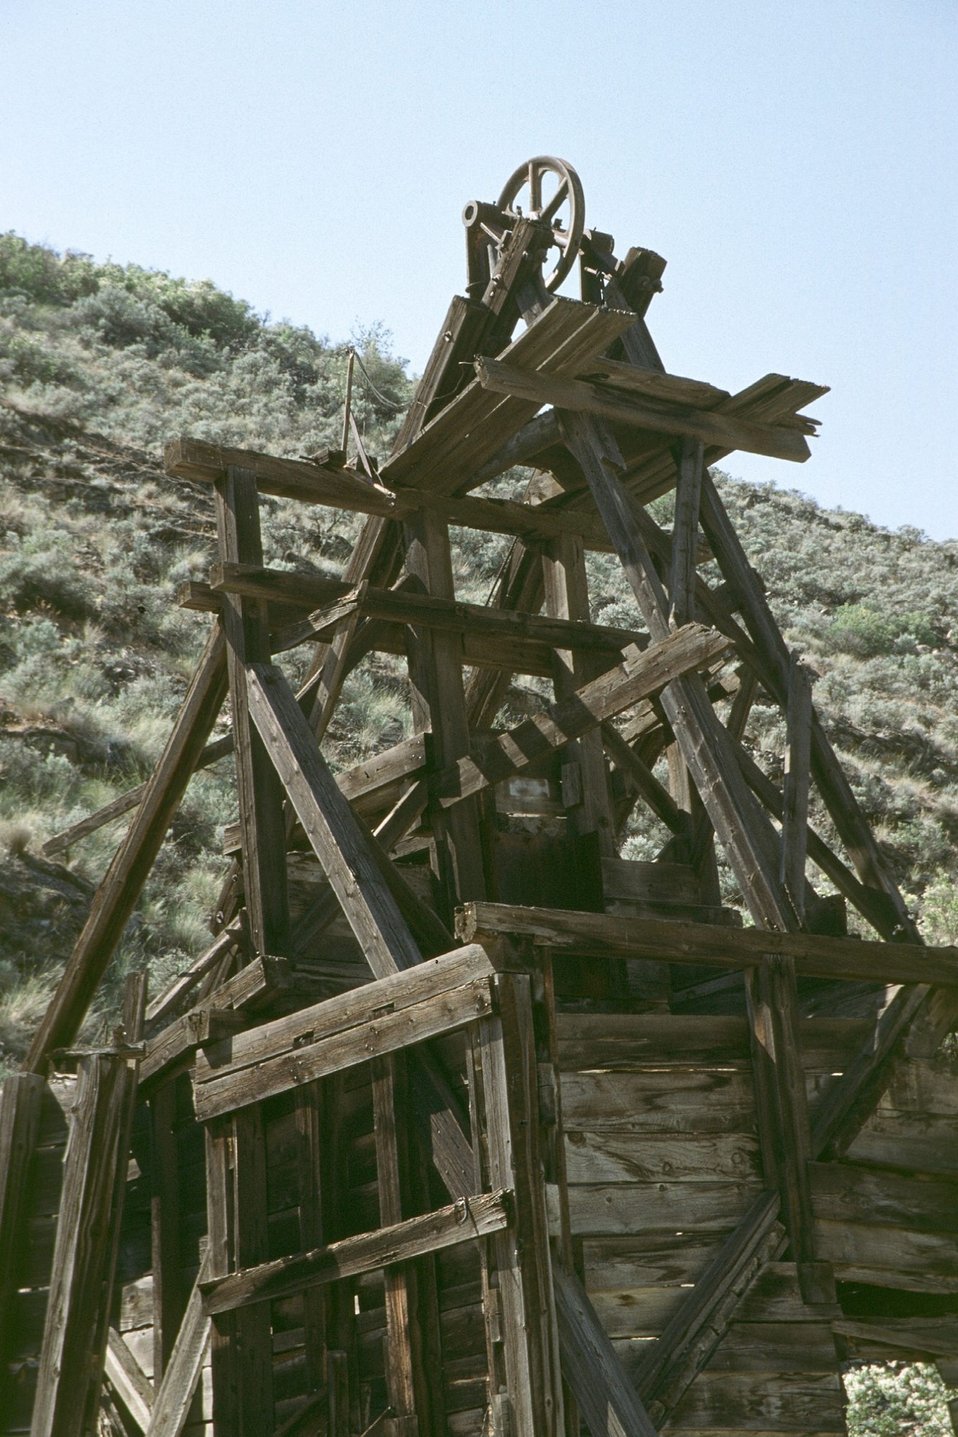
AML. Hoist at Kaaba-Texas Mine, Spokane District, Washington.